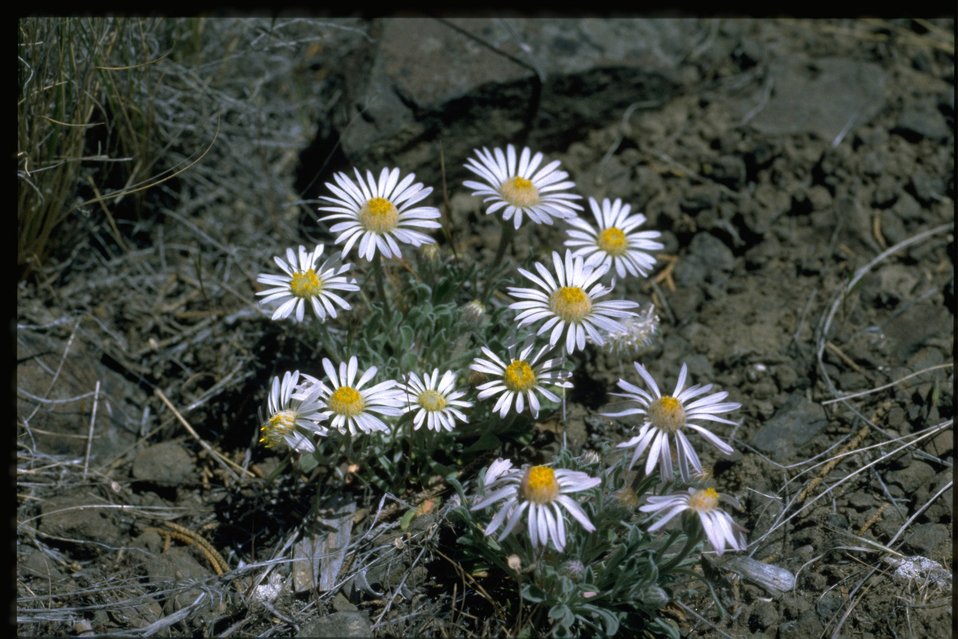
Medium shot of purple cushion fleabane (Erigeron poliospermus var. poliospermus).